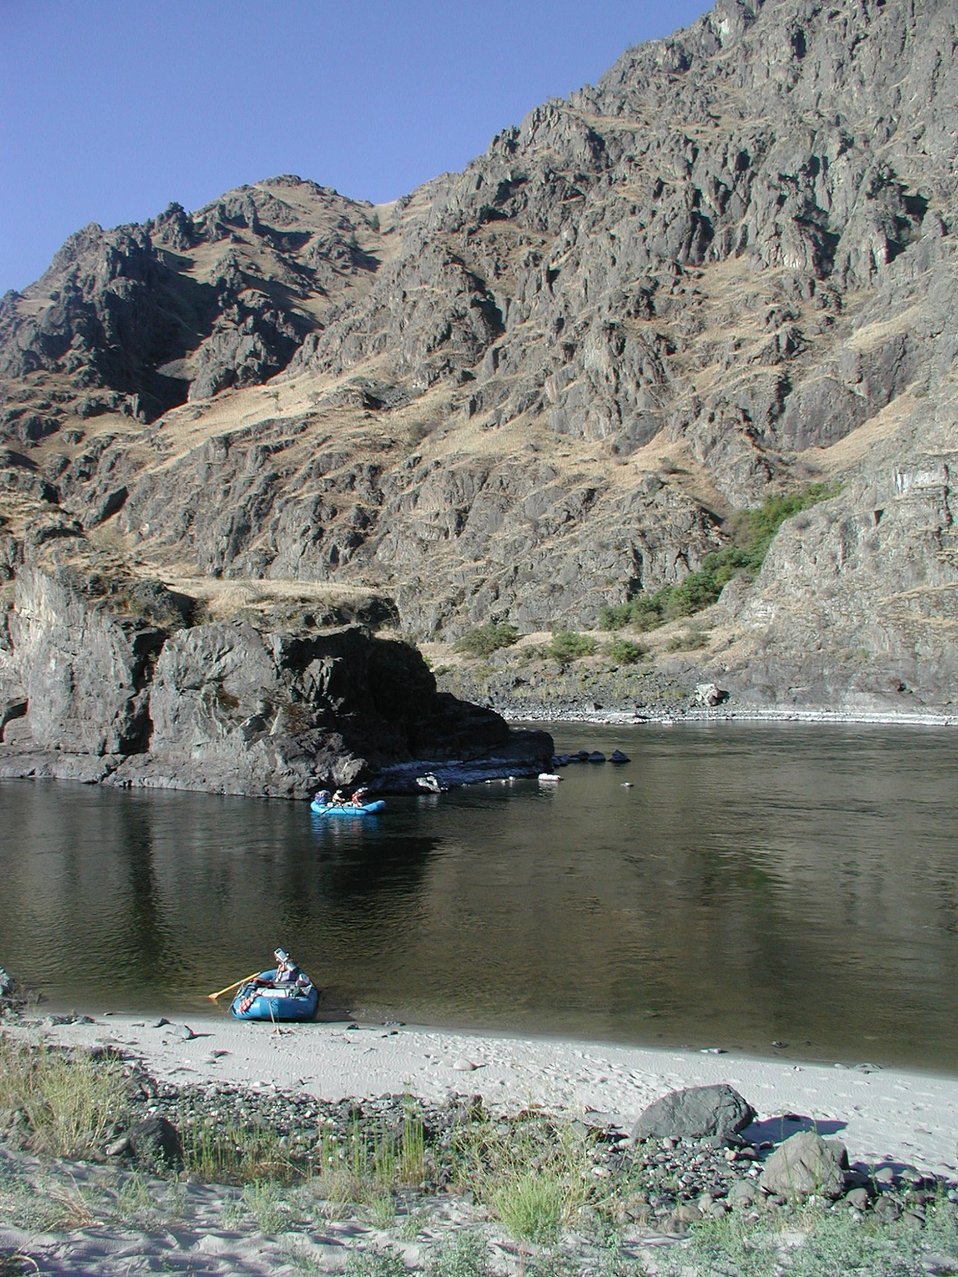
Scenic shot of Lower Salmon River Cottonwood Field Office UCSC Upper Columbia Salmon Clearwater District